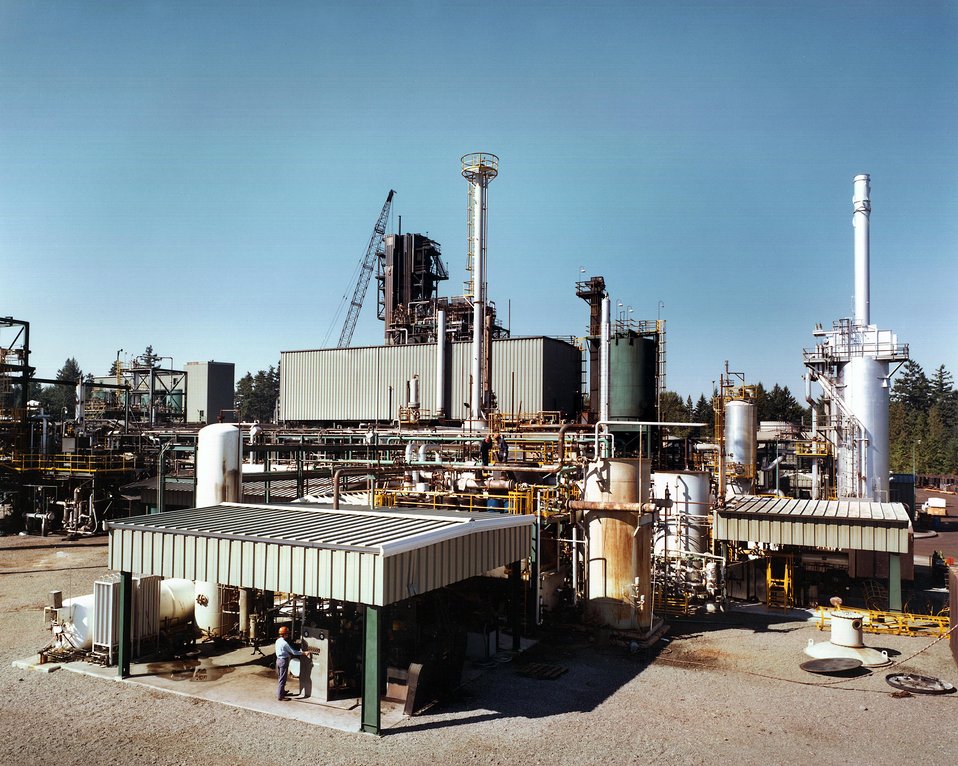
VIEW OF GASIFICATION EQUIPMENT (CENTER) AND SULFUR RECOVERY (FAR RIGHT).